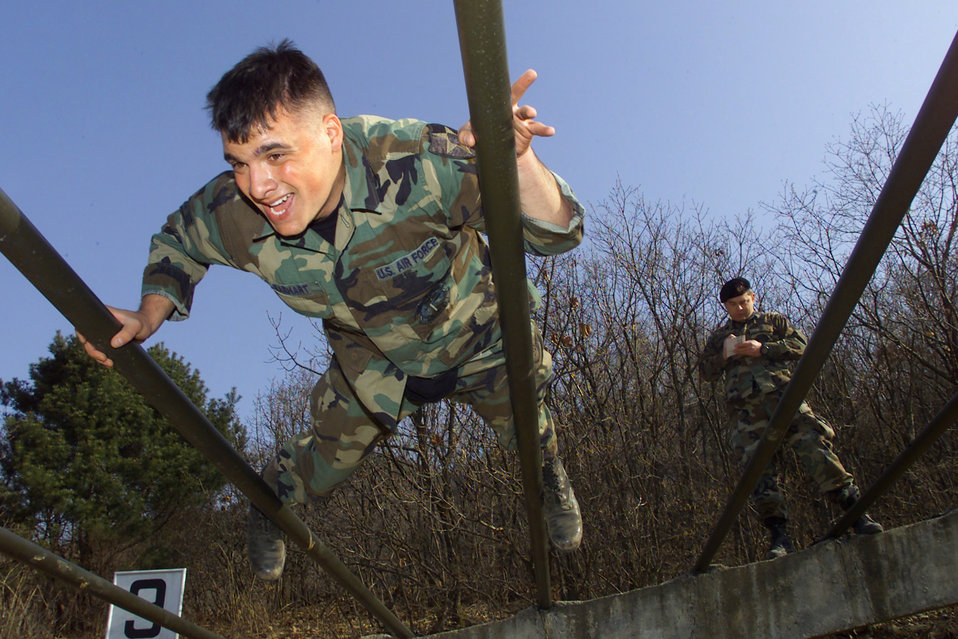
Tiger tales

TWIN BRIDGES TRAINING AREA, South Korea -- Staff Sgt. George Earhart completes the weaver obstacle during Tiger Challenge 2004 here April 9. The weeklong annual competition tests tactical air control and command technicians on their navigation skills, job knowledge, physical endurance and marksmanship. Sergeant Earhart is assigned to the 607th Air Support Operations Squadron at Camp Casey, South Korea.